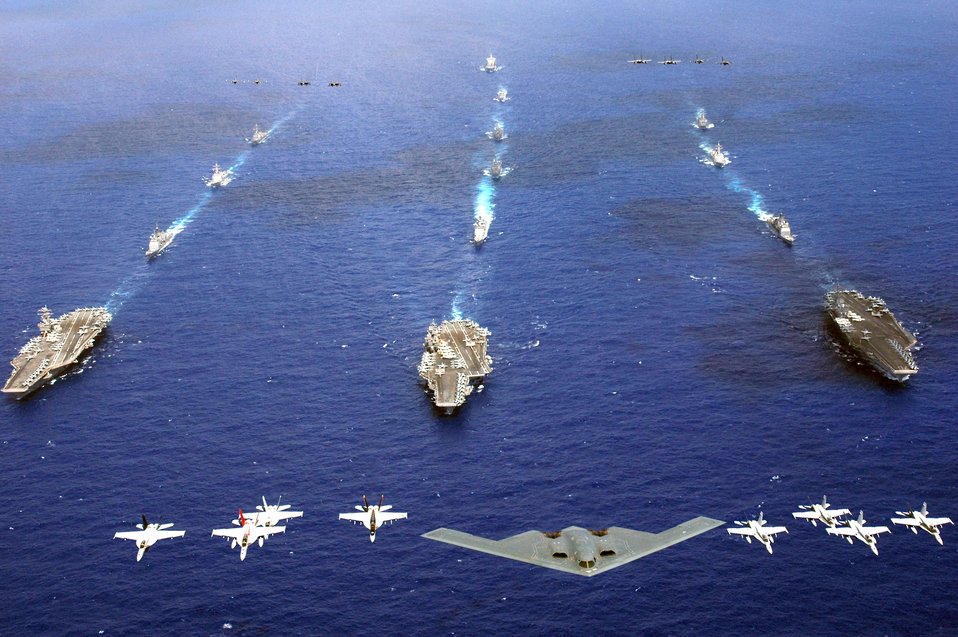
Joint operations in the Pacific

A B-2 Spirit and 16 other aircraft from the Air Force, Navy and Marine Corps fly over the USS Kitty Hawk, USS Ronald Reagan and USS Abraham Lincoln carrier strike groups in the western Pacific Ocean on Sunday, June 18, to kick off Exercise Valiant Shield 2006.